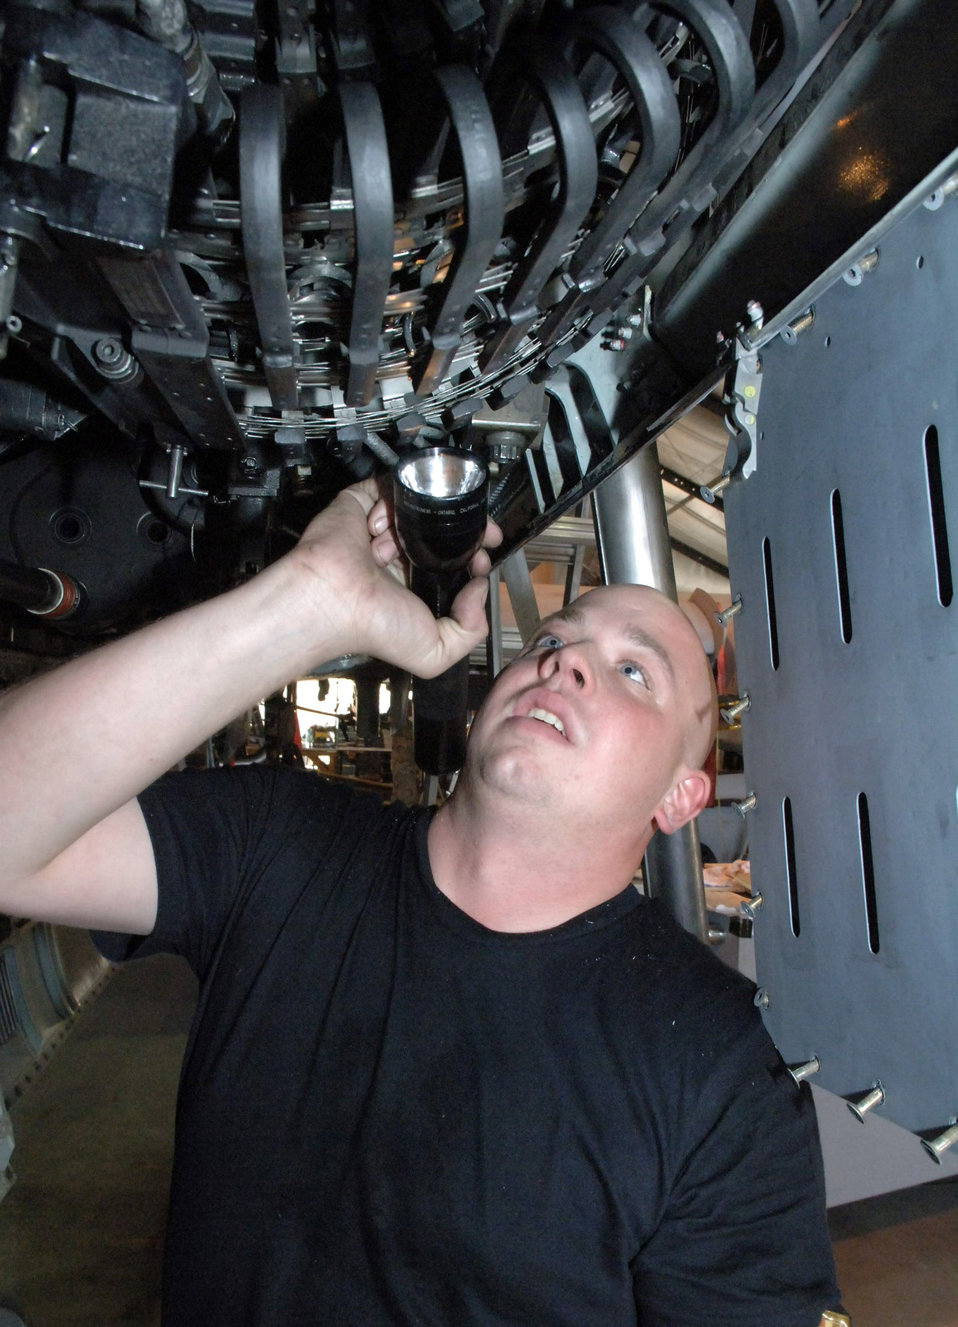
Operation Enduring Freedom

BAGRAM AIR BASE, Afghanistan -- Senior Airman James Maskal, inspects the feed shoot on an A-10 Thunderbolt II gatling gun during a recent phase inspection here. A-10s are inspected every 400 flying hours. In September, A-10s here flew 380 direct close-air support sorties supporting Operation Enduring Freedom. Airman Maskal is an armament specialist with the 455th Expeditionary Aircraft Maintenance Squadron and is deployed from Davis-Monthan Air Force Base, Ariz.